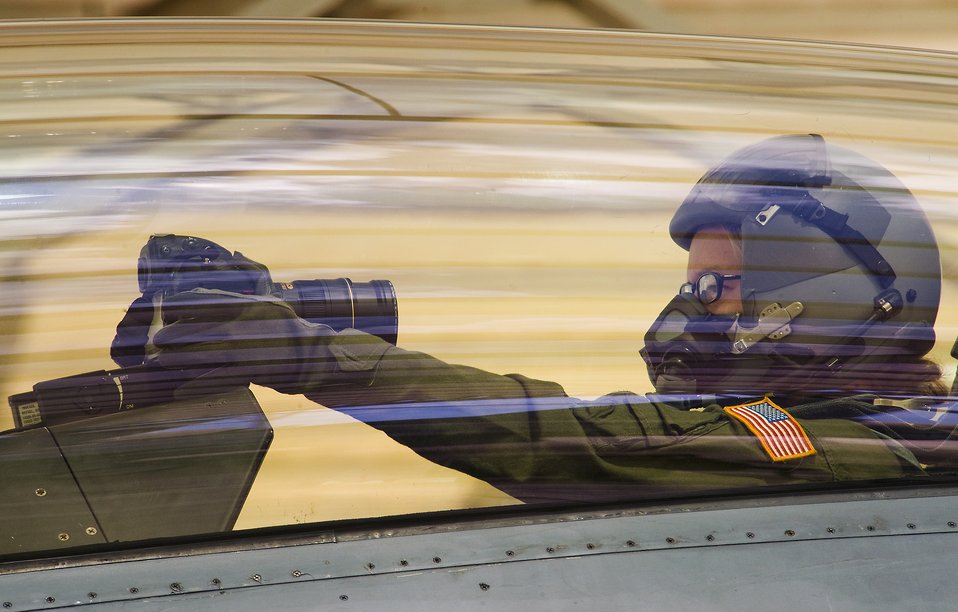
Ready for a fight

Staff Sgt. Desiree Palacios tests and make final settings on her camera before taxing out to on sortie in a F-16D Fighting Falcon with the 182 Fighter Squadron, Lackland Air Force Base, TX. Sgt. Palacios is an aerial photojournalist whose duty is to document the visual story of this fighter mission. Because of the intense number of activities required of all aircrew during flight, only aerial photographers are allowed to take hand-held photographs. The aerial photographer's duty is the safe documentation of aerial missions for a variety of DoD uses. The popular rearward photograph of fighters in the cockpit are usually of aerial photographers who use themselves to help show the human element in fighter jet environment. This day's mission had her in an